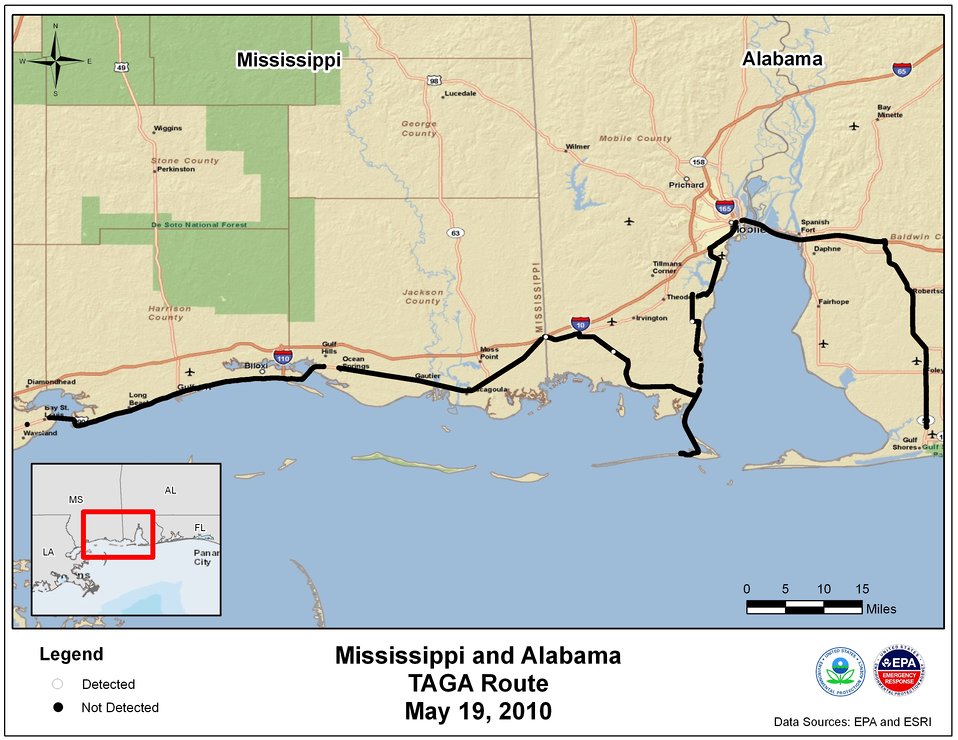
EPA TAGA Air Monitoring Locations May 19, 2010